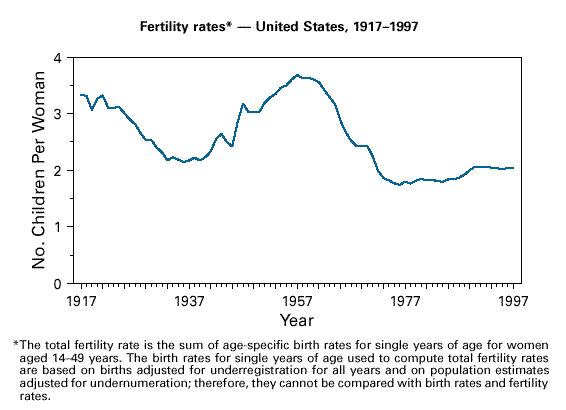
Line graph showing fertility rates in the United States, 1917-1997.